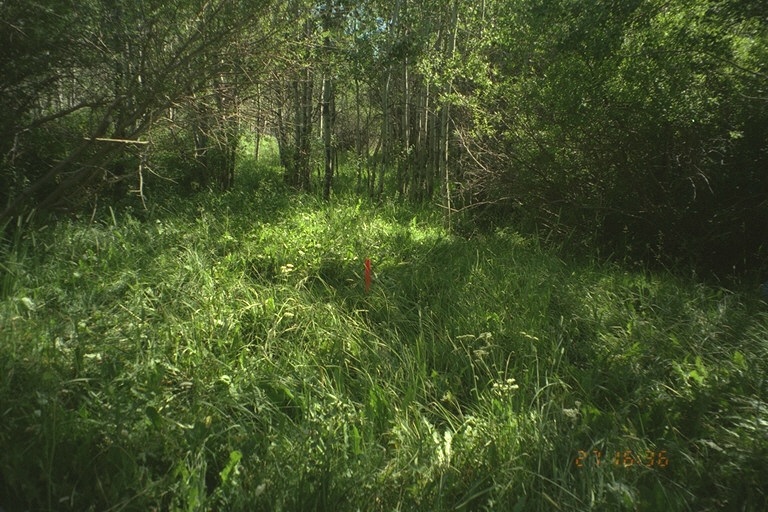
Riparian area Public Lands Salmon Field Office UCSC Upper Columbia Salmon Clearwater District